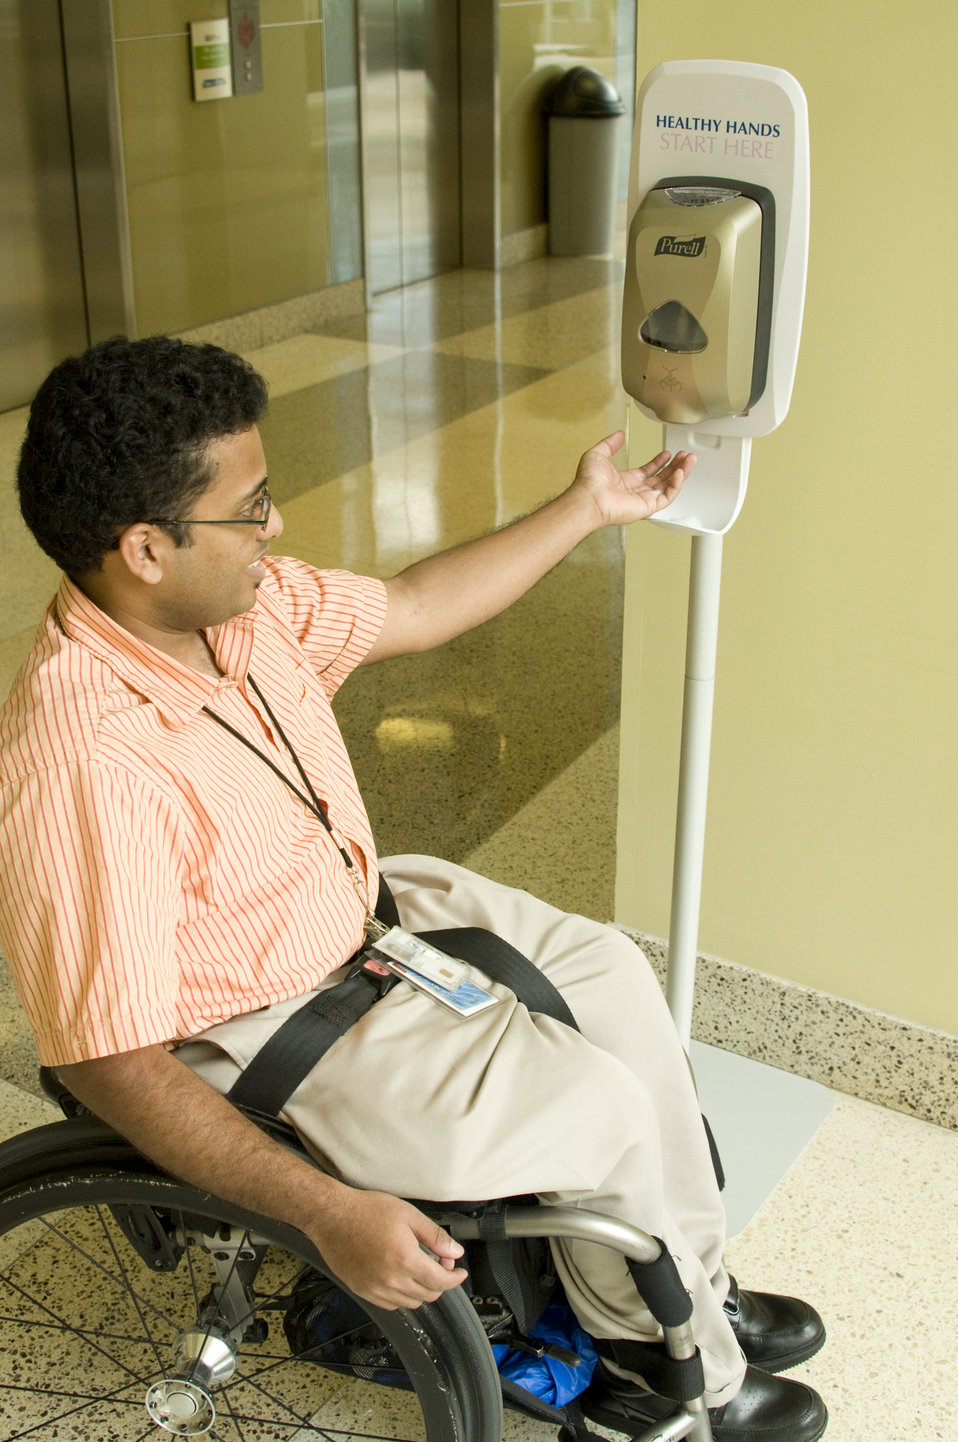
Before leaving one of the Centers for Disease Control's (CDC) Atlanta, Georgia-based facilities, this man seated in his wheelchair, had paused for just a moment to obtain some hand-sanitizer from an automatic dispenser. Note the height at which the dispenser was situated, making accessibility to its contents quite easy for any interested passersby.